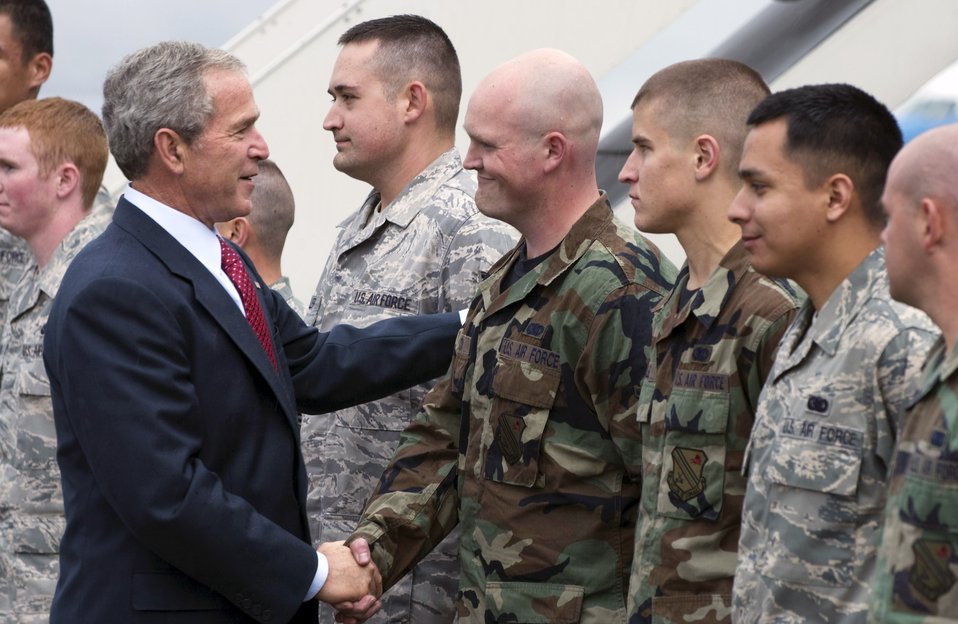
President visits Eielson

President George W. Bush personally thanks Airman Christopher Coon for his service Aug. 4, 2008 at Eielson Air Force Base, Alaska. The president made a short stop at Eielson AFB during his trip to the 2008 Olympic Games being held in Beijing. Airman Coon is assigned to the 354th Logistic Readiness Squadron.